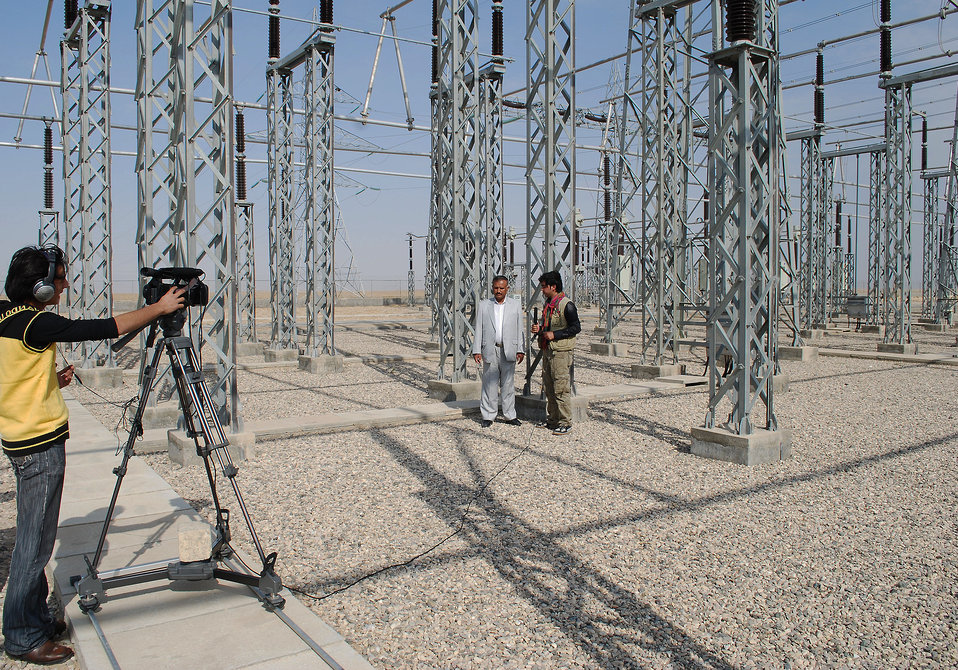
'On the Road' in Balkh Province